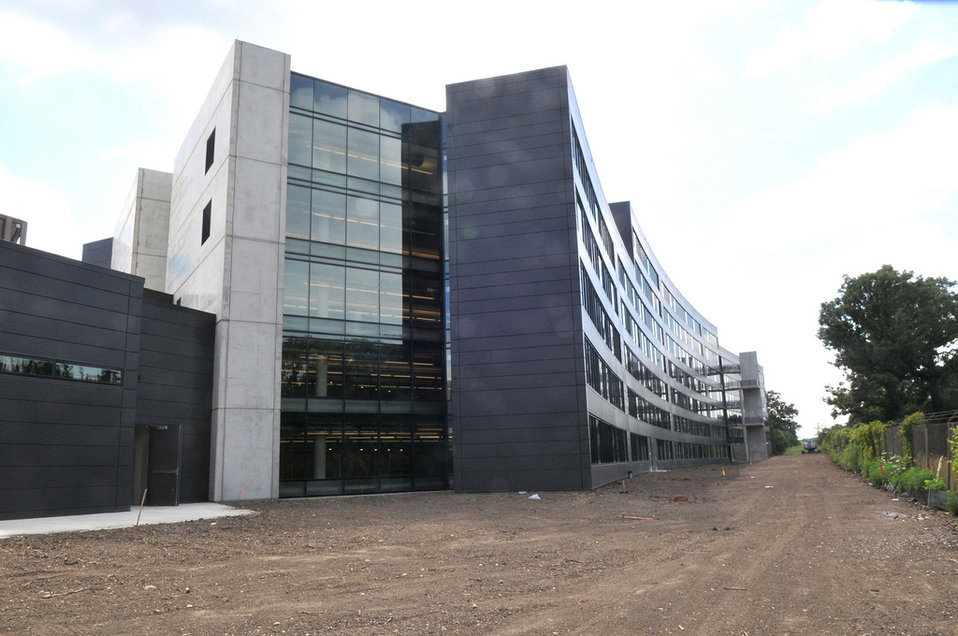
Exterior view of the new Theory and Computing Sciences (TCS) Building.

The construction of the more than 200,000 square-foot, seven-story-tall Theory and Computing Sciences (TCS) building is underway near Argonne's North Gate. When completed, the building will provide a much-needed infrastructure for large-scale computers, computational laboratories, a digital conference and meeting area as well as a consolidation Argonne library.